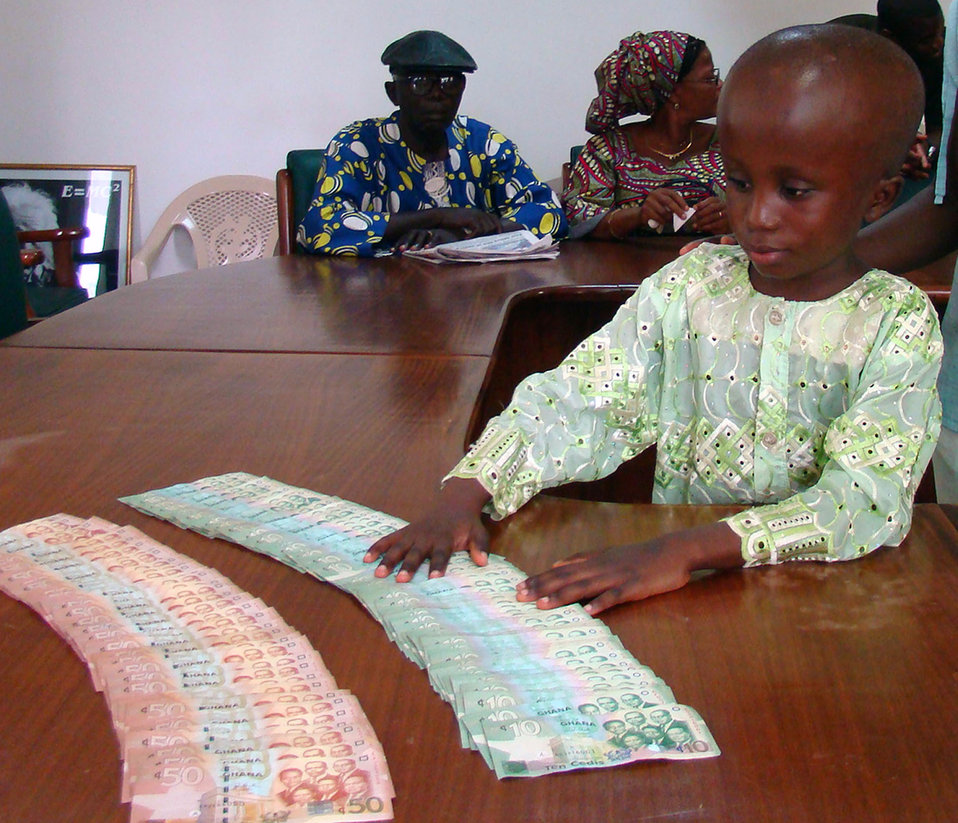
Airman helps save boy in Africa

Alex Vadis Teye, 9, admires the money donated by American military members in Africa to pay for surgery he needs. Alex visited the Korle Bu Teaching Hospital in Ghana, Africa, Feb. 22 to accept the donation that came in response to his parents' plea for help. Alex suffers from hydrocephalus, a common birth defect which causes an excess of water in the brain. The U.S. military presence in Ghana is in support of President George Bush's visits to the continent.